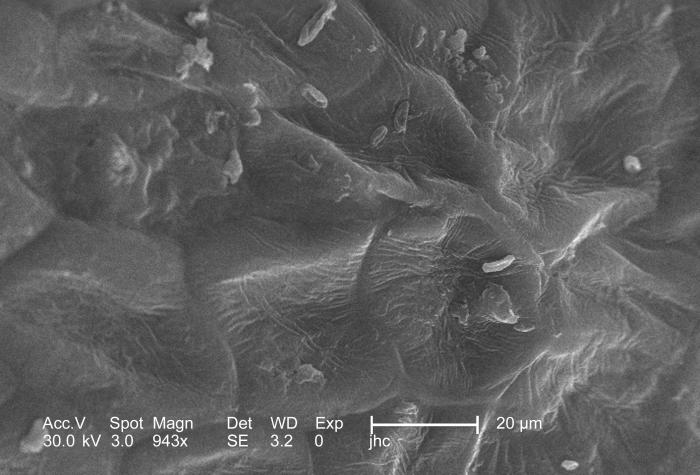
Under a relatively-high magnification of 943x, this scanning electron micrograph (SEM) depicted a detailed view of a single seed protuberance of the clustered exterior of a commonly growing wild strawberry, Fragaria virginiana, that was found growing in Lullwater Park, inside the Decatur, Georgia suburbs. The F. virginiana fruiting bodies are very similar to the more familiar, store-bought varieties, and those who've tasted these fruits say that they're quite delicious.